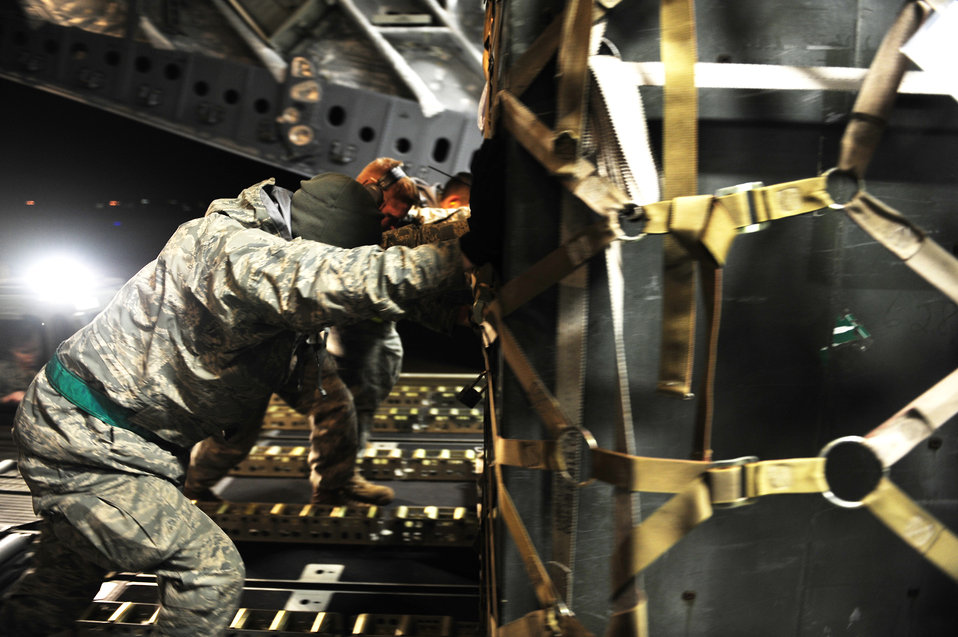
Haiti Relief Operations

Airmen load cargo onto a C-17 Globemaster III Jan. 14, 2010 at Joint Base McGuire-Dix-Lakehurst, N.J., supporting relief efforts to Haiti. The Airmen are assigned to the 621st Contingency Response Wing at JB McGuire.